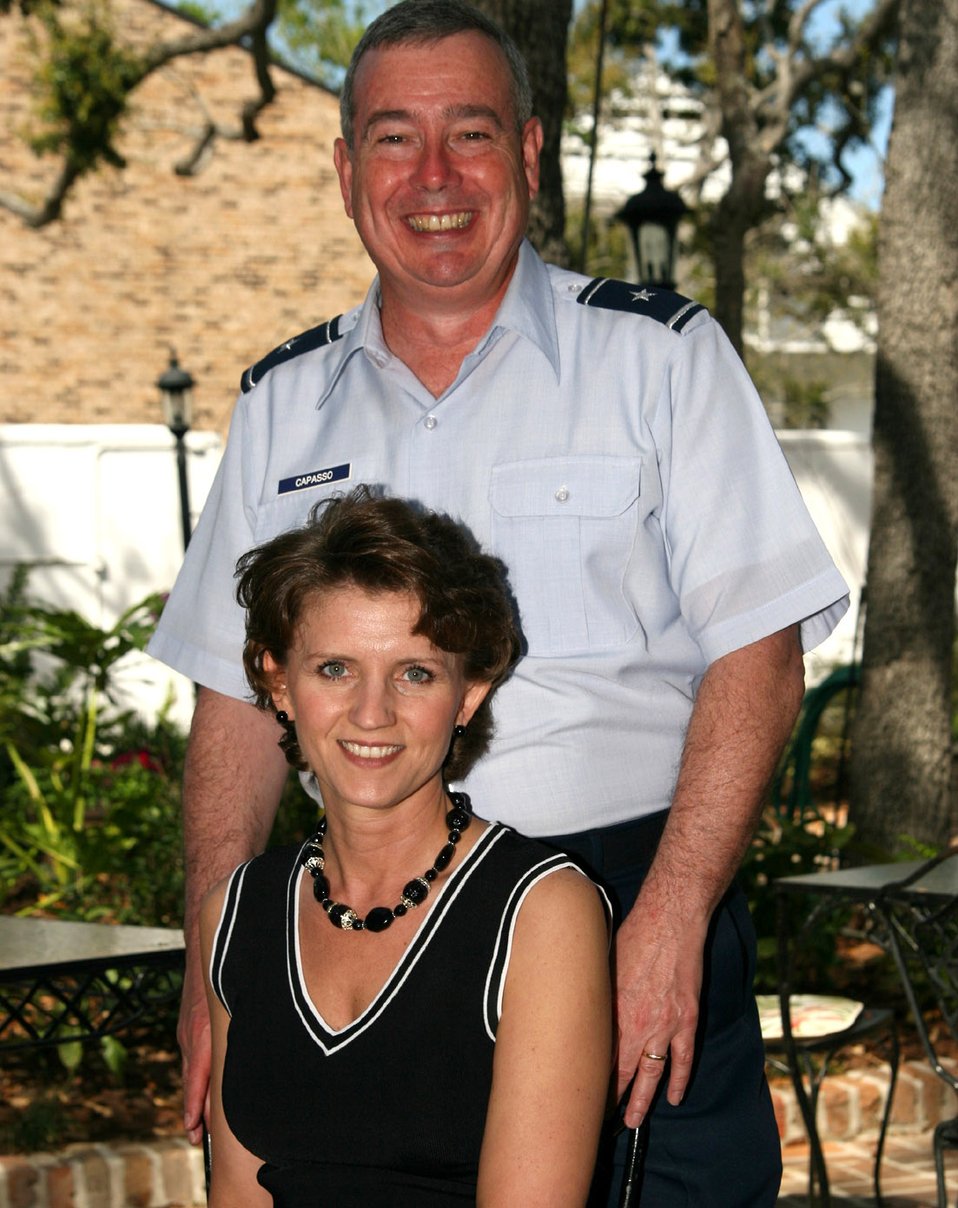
Keesler couple earns 2007 O'Malley award

Brig. Gen. Paul and Laura Capasso, former 81st Training Wing commander and first lady, received the 2007 Gen. and Mrs. Jerome F. O'Malley Award in a ceremony at the Pentagon recently. The award recognizes the Capassos for their leadership in the